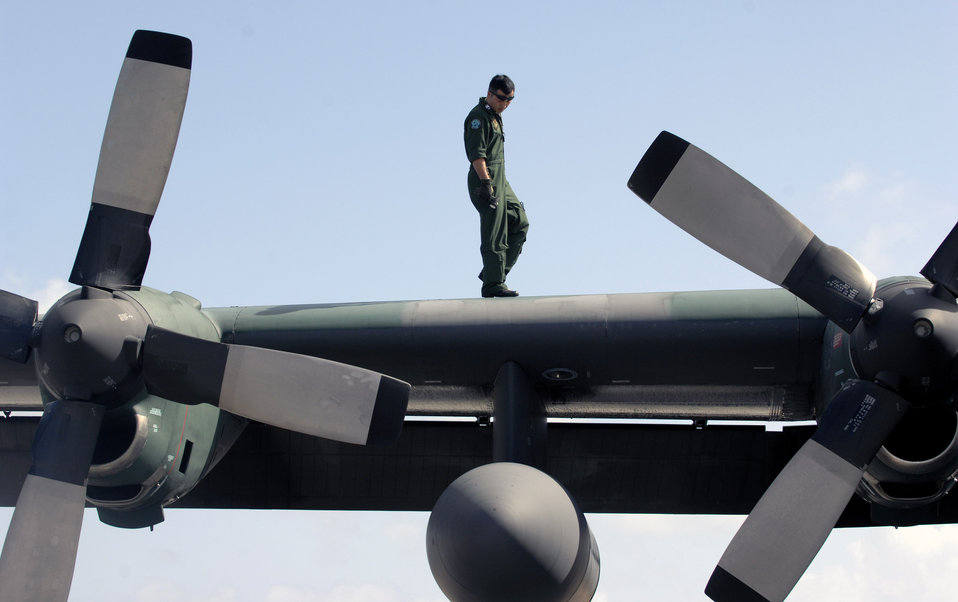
Japan forces arrive in Guam for joint exercise

A Japan Air Self Defense Force member performs post flight maintenance on a JASDF C-130 after its arrival for participation in Exercise Cope North 09-1 Jan. 27 at Andersen Air Force Base, Guam. More than 60 JASDF members arrived in three C-130s to participate in the regularly scheduled exercise scheduled for Feb. 2 through 13. Cope North is designed to enhance U.S. and Japanese air operations in defense of Japan.